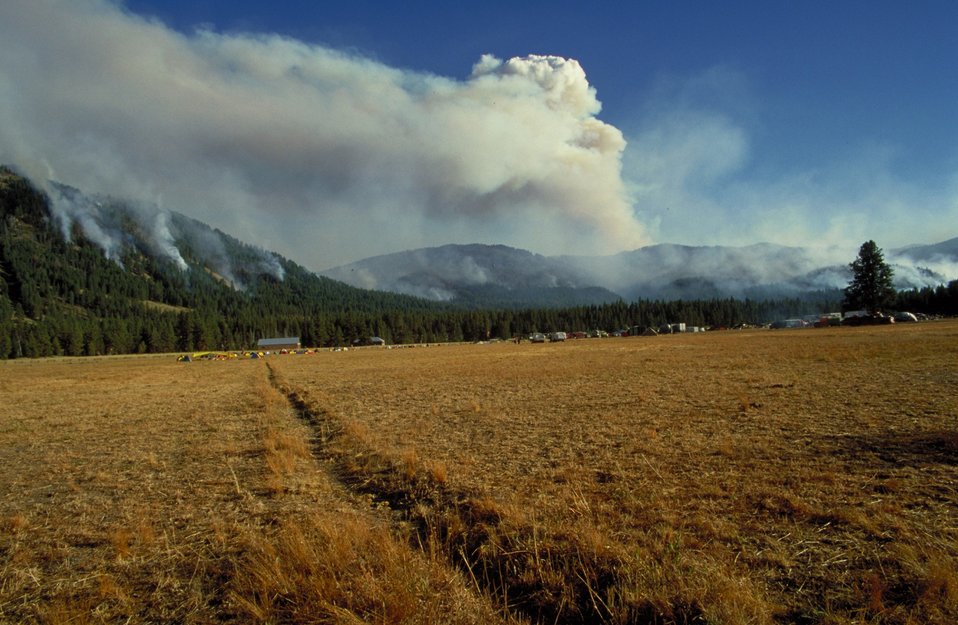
Urban interface Fire Fire Season 2000 Lower Snake River District LSRD